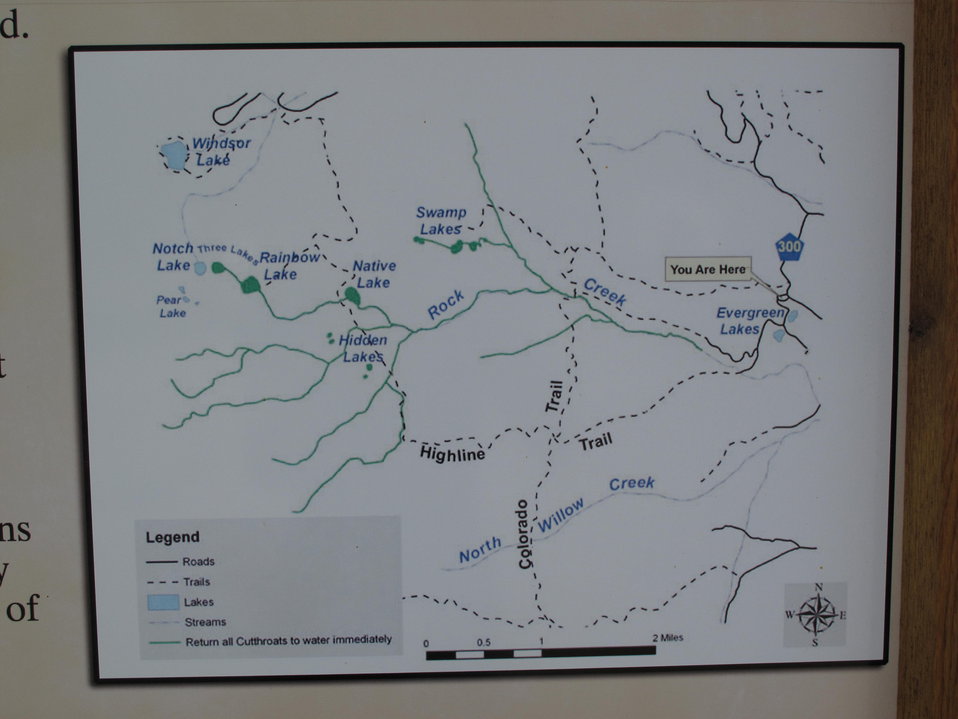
Leadville National Fish Hatchery

This map displays all the roads, trails and lakes located within the hatchery's property.